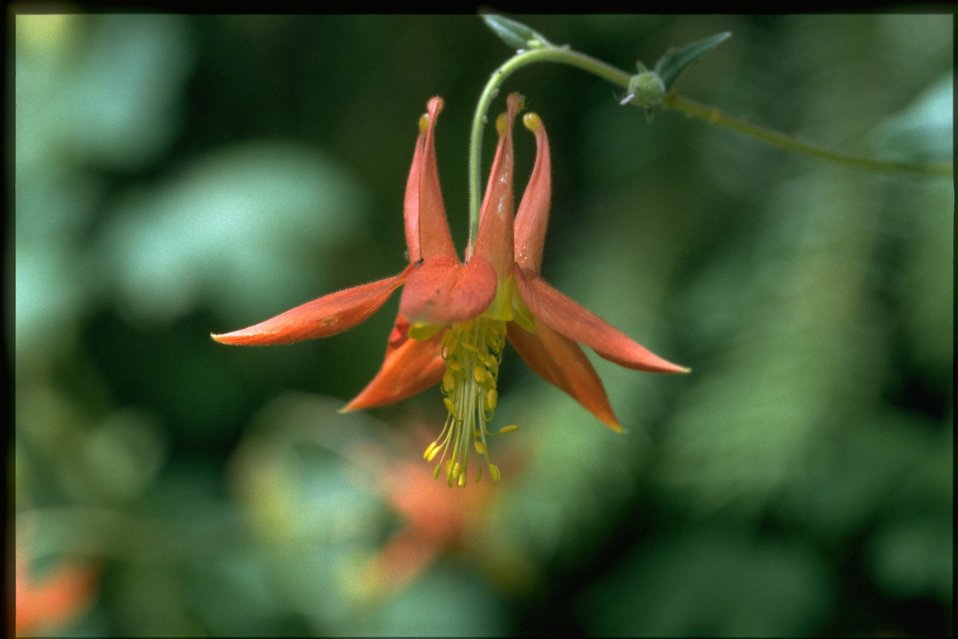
Closeup shot of Aquilegia formosa.